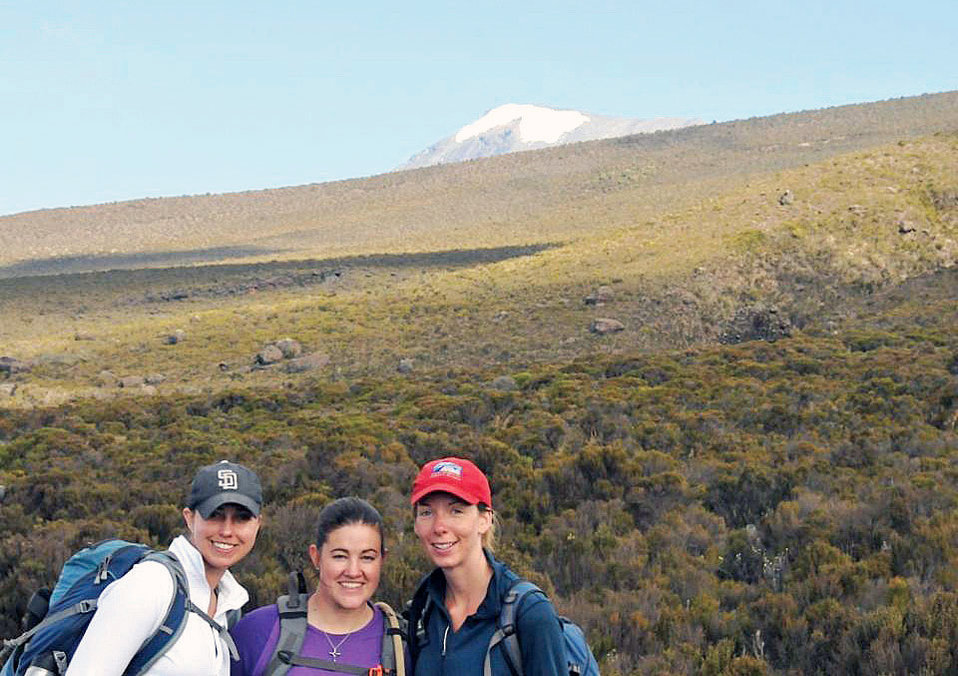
Reservist's Kilimanjaro climb a mountain of a cause

Maj. Lisa Reaver (center) poses with fellow climbers Lauren Drietzler (left) and Heather Ruhle after summiting Mount Kilimanjaro's Uhuru Peak.